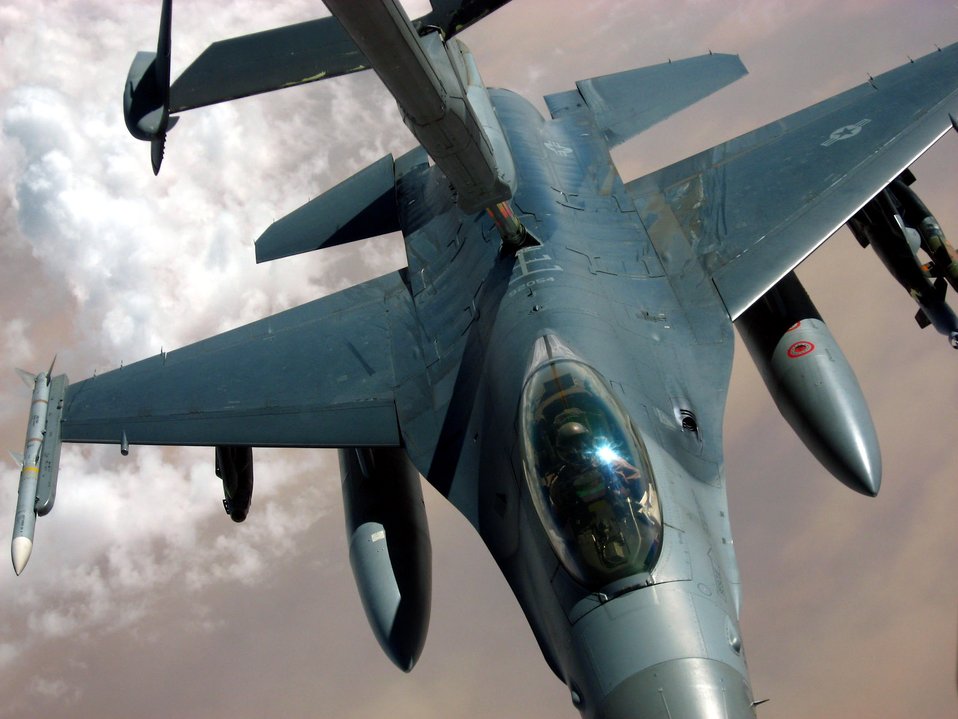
Refuel for the fight

An F-16 Fighting Falcon from the New York Air National Guard takes fuel from a KC-10 Extender from the 380th Air Expeditionary Wing over Iraq Nov. 4. The 380th AEW is the largest air refueling unit in Southwest Asia, using KC-10s and KC-135 Stratotankers to fuel U.S. and allied aircraft.